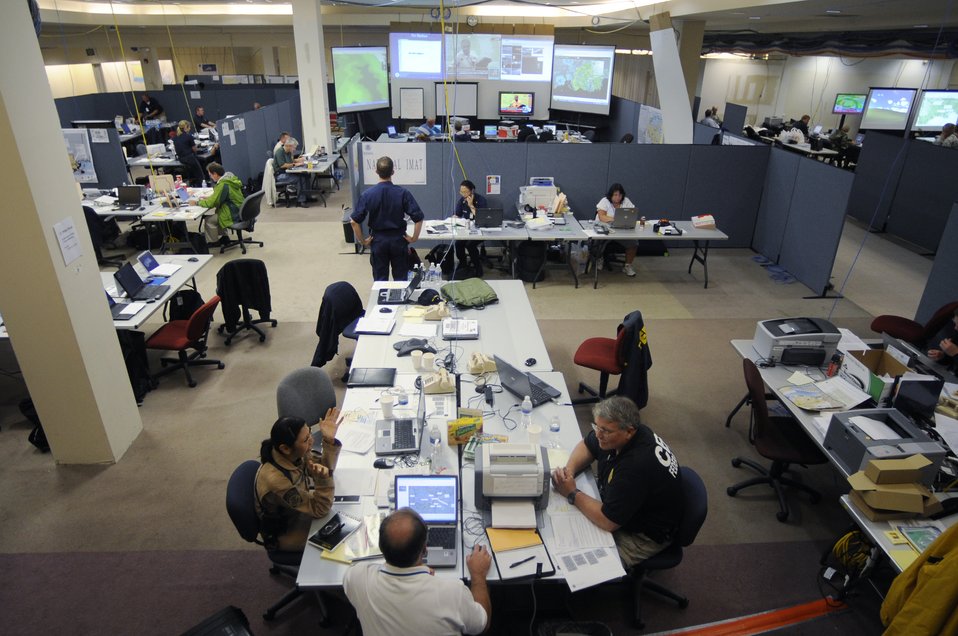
Guard vital to hurricane relief efforts

Officials with the Federal Emergency Management Agency and the Department of Defense along with emergency personnel track Hurricane Gustav's path and conduct relief operations Sept. 1 from the Hurricane Gustav Joint Field Office in Baton Rouge, La.